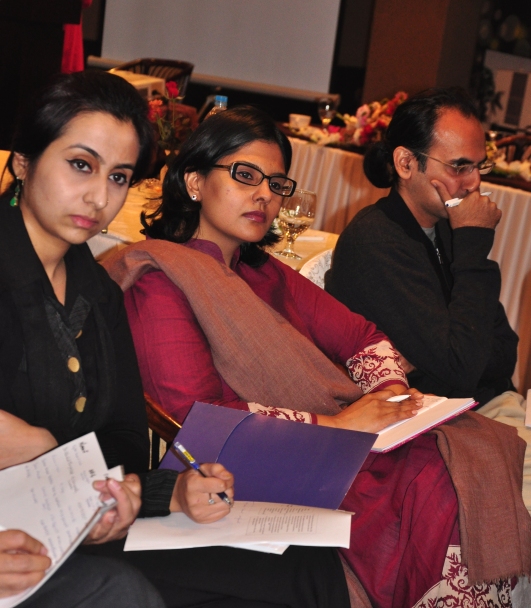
Workshop Participants